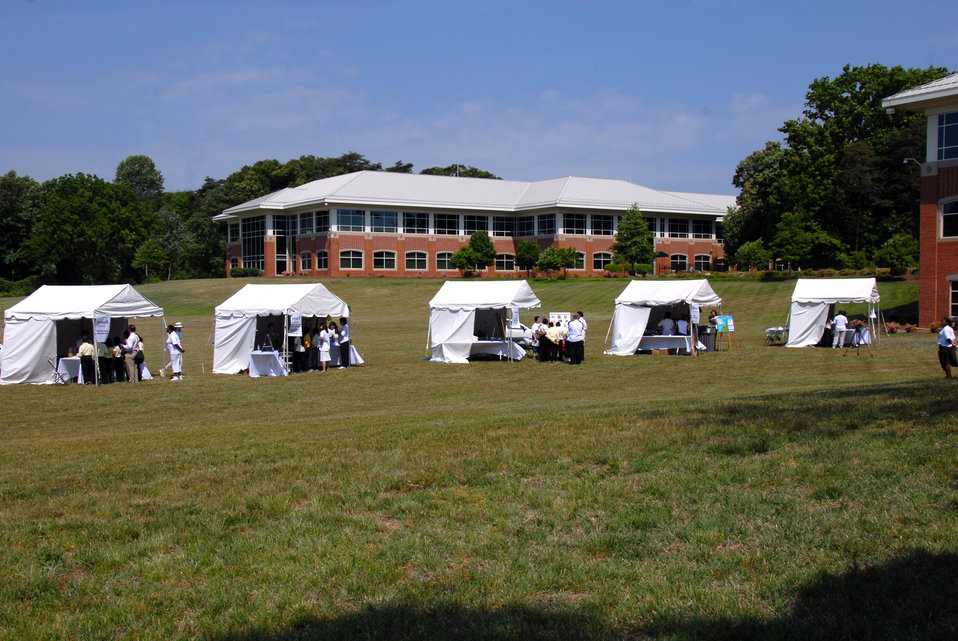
U.S. Department of Agriculture's (USDA) Food Safety and Inspection Service (FSIS) annually hosts a food safety camp that provides children with hands-on instruction about the dangers of foodborne illness and how to prevent it. This Food Safety camp was held at the USDA Beltsville, Maryland facility on May 23, 2007.